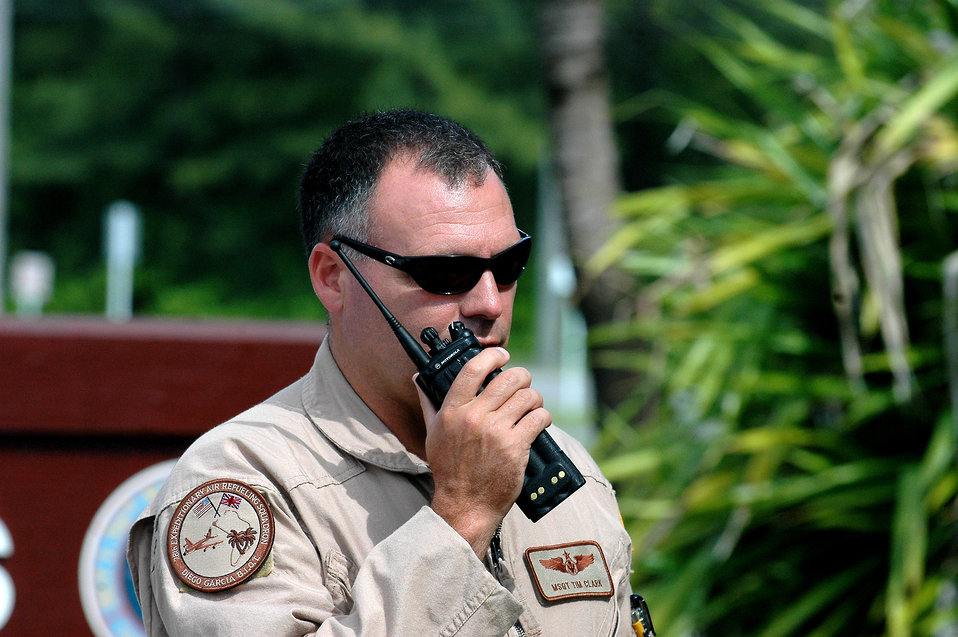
The flow behind the mission

Master Sgt. Sgt. Tim Clark coordinates KC-135 Stratotanker operations activities. Sergeant Clark is deployed from Robins Air Force Base, Ga. He is assigned to the 28th Expeditionary Air Refueling Squadron at a forward-deployed location supporting Operation Enduring Freedom.